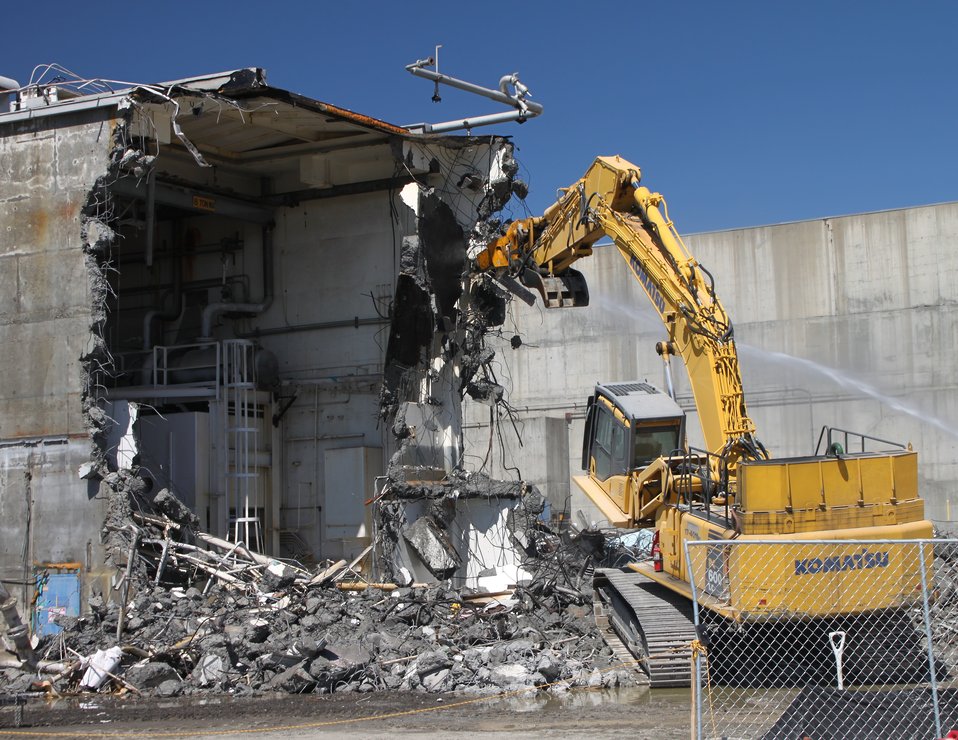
Hanford Demolition

Workers demolish the 224-U facility, one of five ancillary facilities adjacent to Hanford’s U Plant.